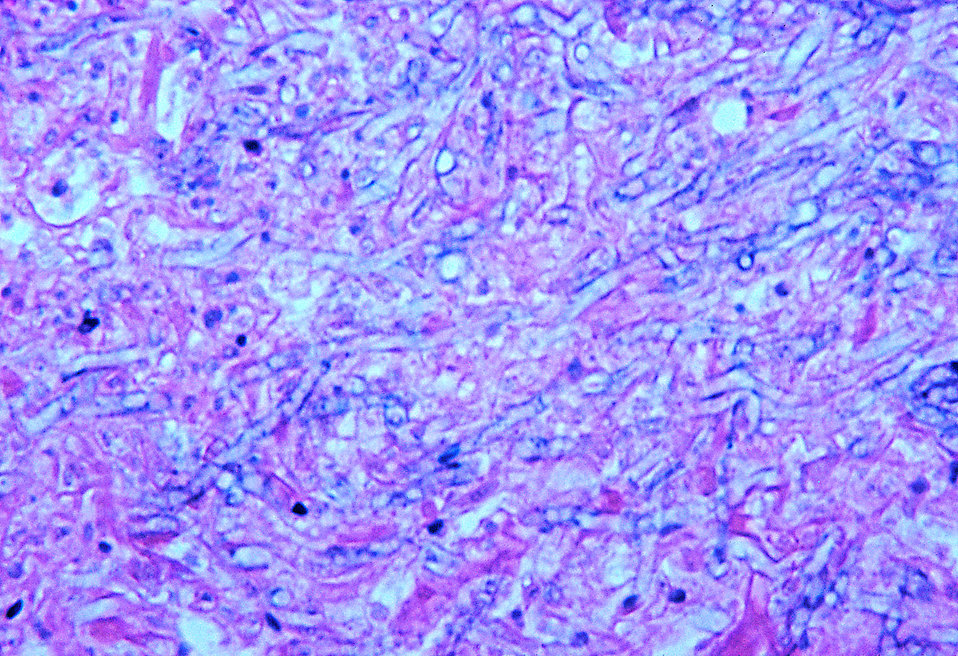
Note the histopathologic changes seen in aspergillosis of the lung of a caged parrot using H&E stain, which shows fungal hyphae.